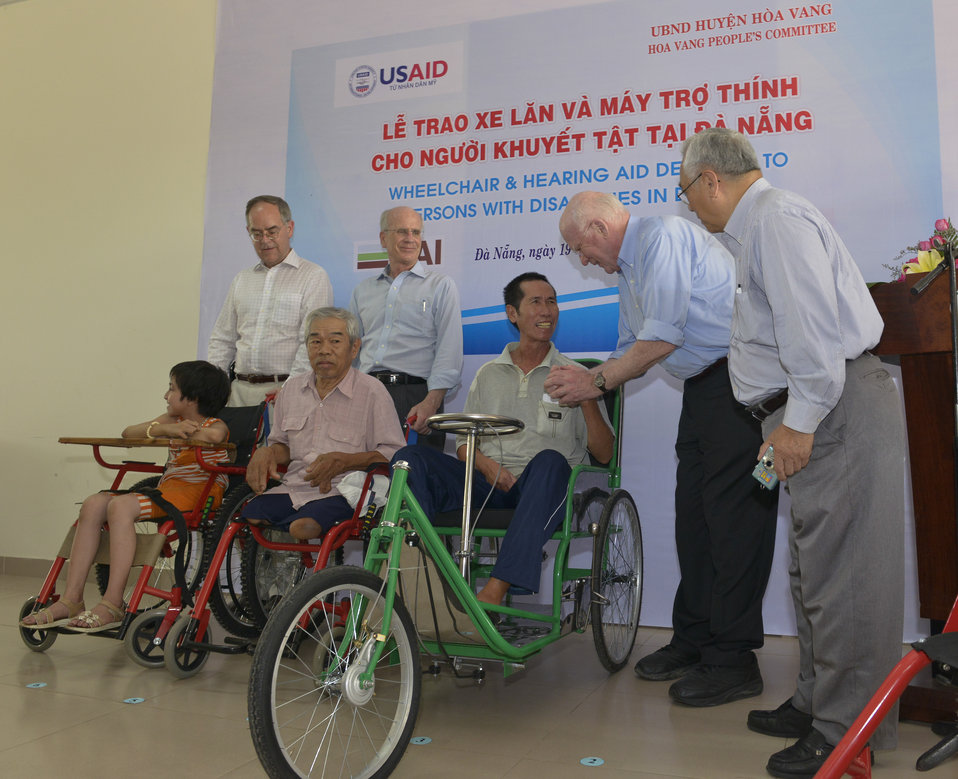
U.S. Congressional delegation attends a wheelchairs and hearing aids distribution event in Danang

Hoa Vang District Hospital, Danang, April 19, 2014.